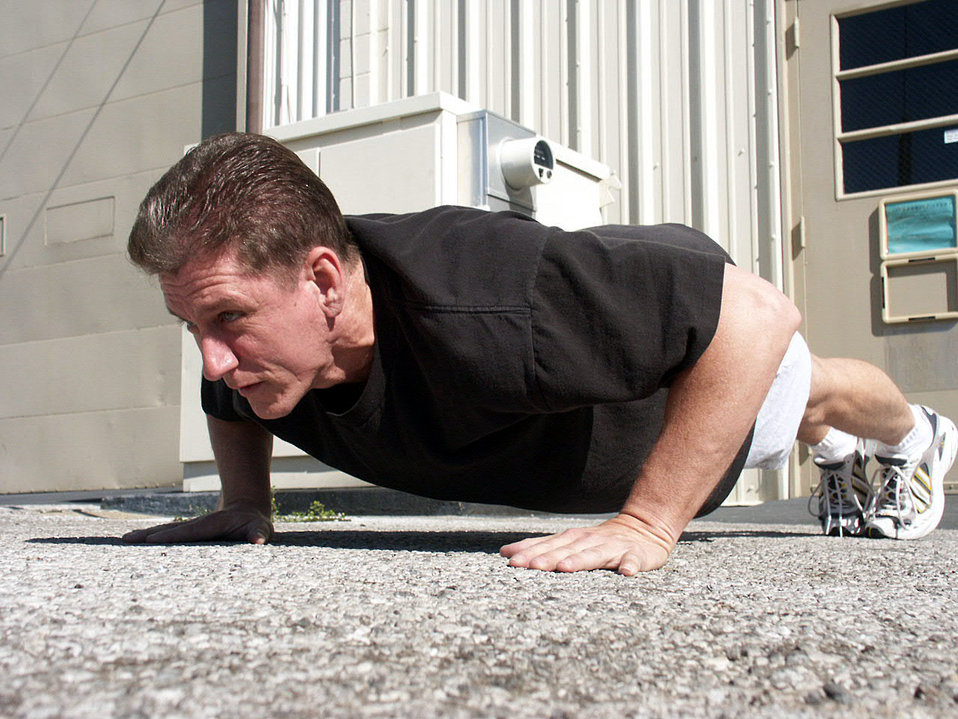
Getting fit

EGLIN AIR FORCE BASE, Fla. -- Master Sgt. Michael Moss pushes himself through some pushups. Six months ago, Sergeant Moss was overweight and could not run half of the required distance to pass the new fitness test. Now he is setting the example for his flight and said he is feeling better than he ever has. Sergeant Moss is assigned to the 33rd Maintenance Squadron's aerospace ground equipment flight.